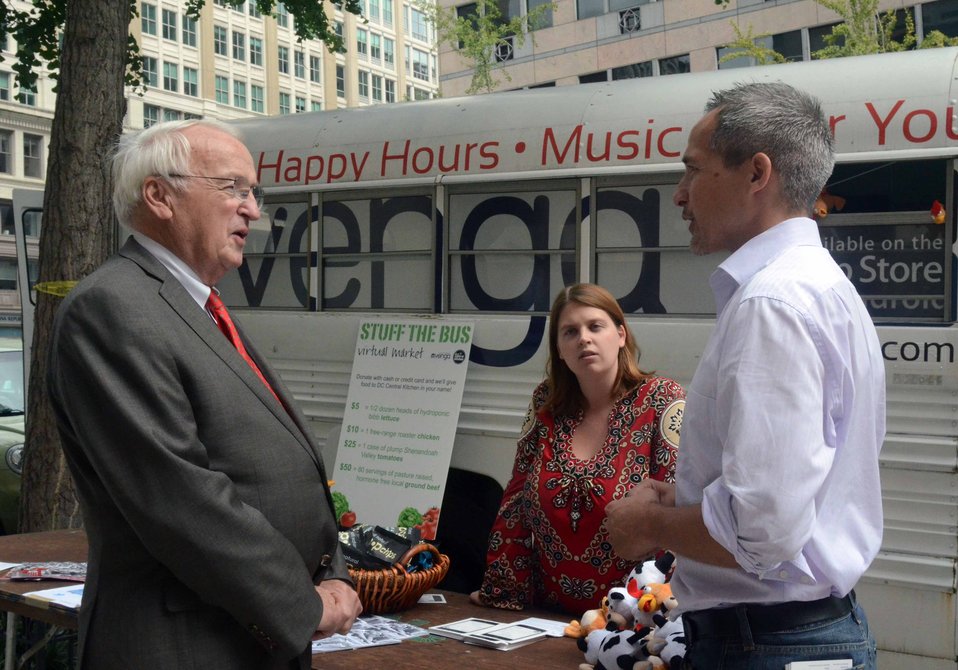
Under Secretary for Food, Nutrition and Consumer Service, Kevin Concannon, (left) talks with Missy Frederick of Venga (center) and Winston Bao Lord, President of Venga (right) at the “Stuff the Bus Tour” on Wednesday, September 21, 2011, in Washington D.C. The U.S. Department of Agriculture, Food, Nutrition and Consumer Service working with with the D.C. Central Kitchen and Venga the sponsors of the “Stuff the Bus Tour.' Over the next two weeks, people can either bring donations or buy products from the virtual market located at the events. All food and proceeds go to D.C. Central Kitchen benefiting thousands of people in the D.C. area.